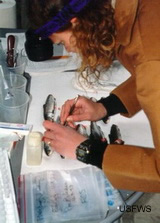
Lab work - Idaho Fish Health Center